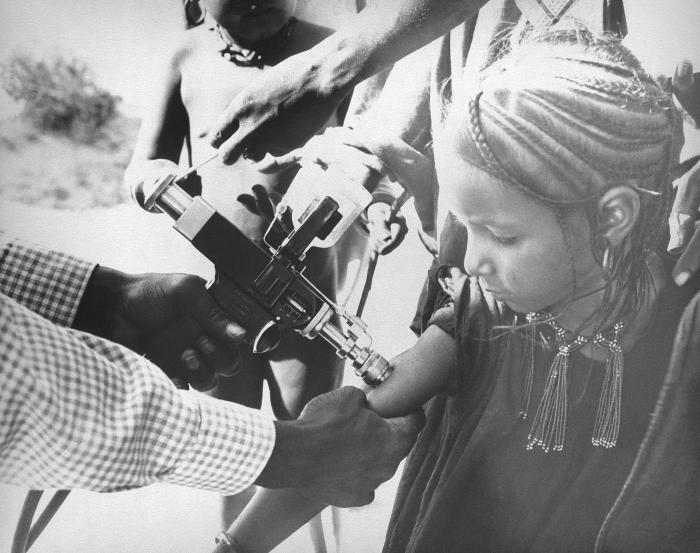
This Nigerien child is receiving a smallpox vaccination during the WHO Smallpox Eradication Project, 1968.